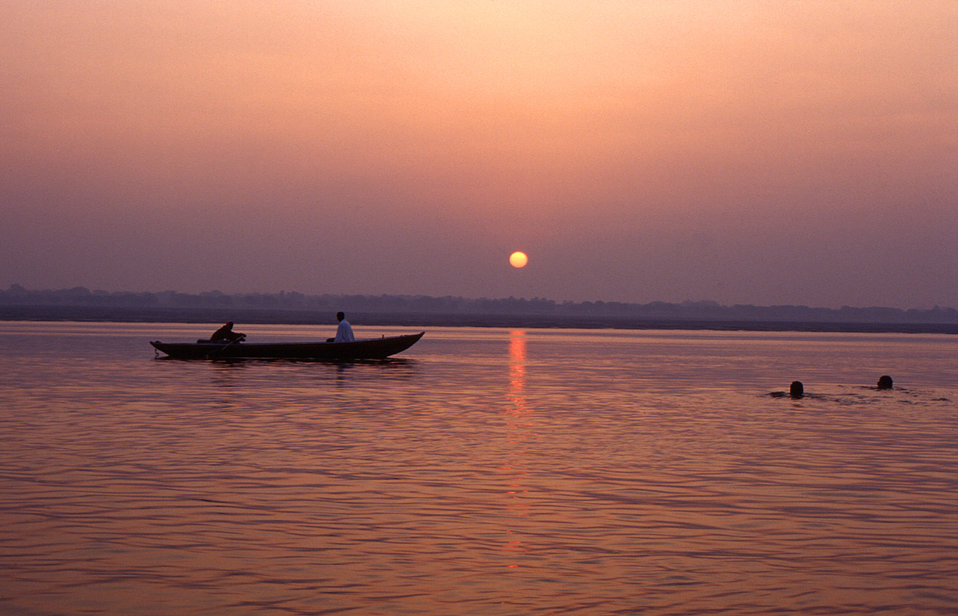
This image, which depicted a beautiful sunset glistening off a body of water in the Gorakhpur District of India, was provided by Chris Zahniser, B.S.N., R.N., M.P.H., a STOP Transmission of Polio (STOP) immunization initiative team member and photographer, who was assigned to the state of Uttar Pradesh in northern India, and spent three months working in the Districts of Gorakhpur and Deoria. In order of descending hierarchy, the country of India is composed of 25 States, 7 Union Territories, and 466 Districts, which are subdivided into Tahsils.